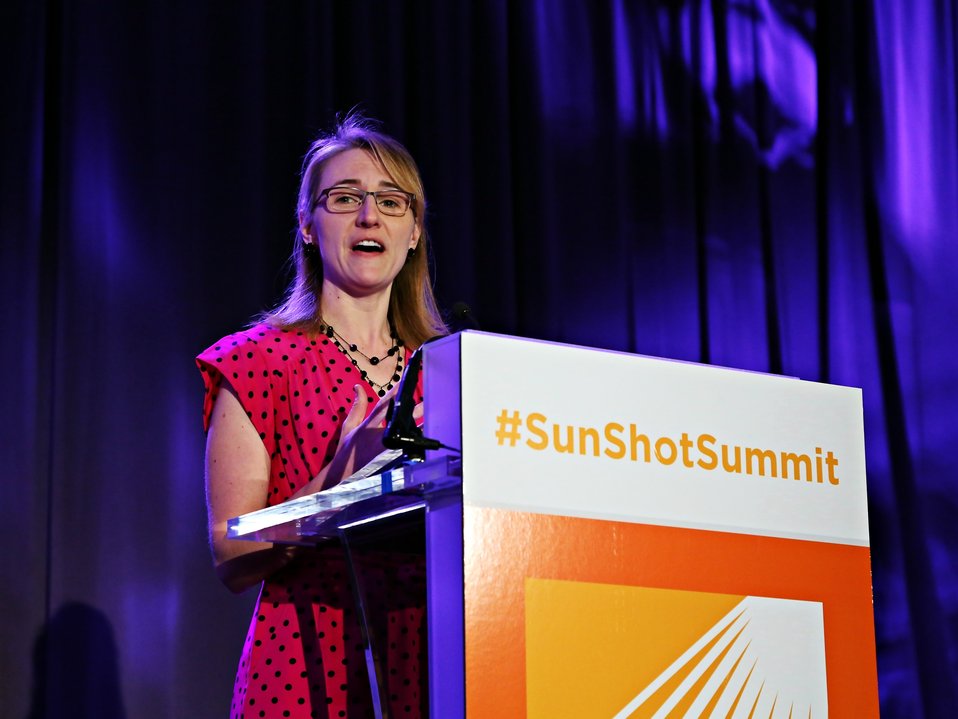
Day 2 Keynote Session 19

SunShot's Elaine Ulrich, Acting Balance of Systems/Soft Costs Program Manager, providing a SunShot Portfolio Overview.